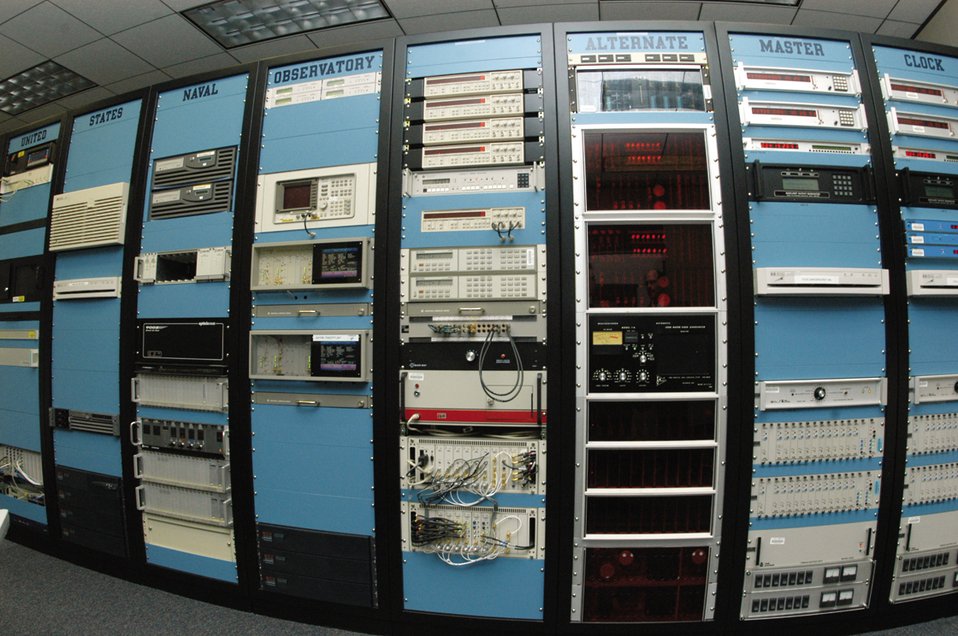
A leap second

The U.S. Naval Observatory Alternate Master Clock, located on the 2nd Space Operations Squadron's operations center, is accurate to within one second every 20 million years. The 2nd SOPS and USNO professionals added the first leap second in seven years on Jan. 1, 2006.